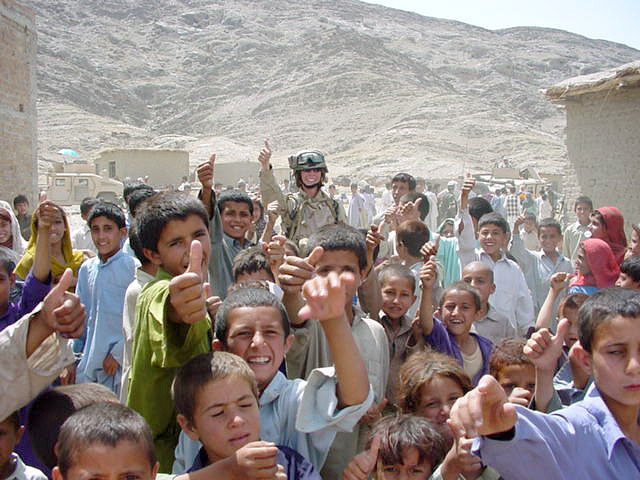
Thumbs-up

Senior Airman Lauren Sinclair gives the thumbs-up sign along with a group of Afghan refugees who are showing their appreciation for the humanitarian aid given to them by the Air Force Provincial Reconstruction Team. Airman Sinclair is with the 859th Medical Operations Squadron.